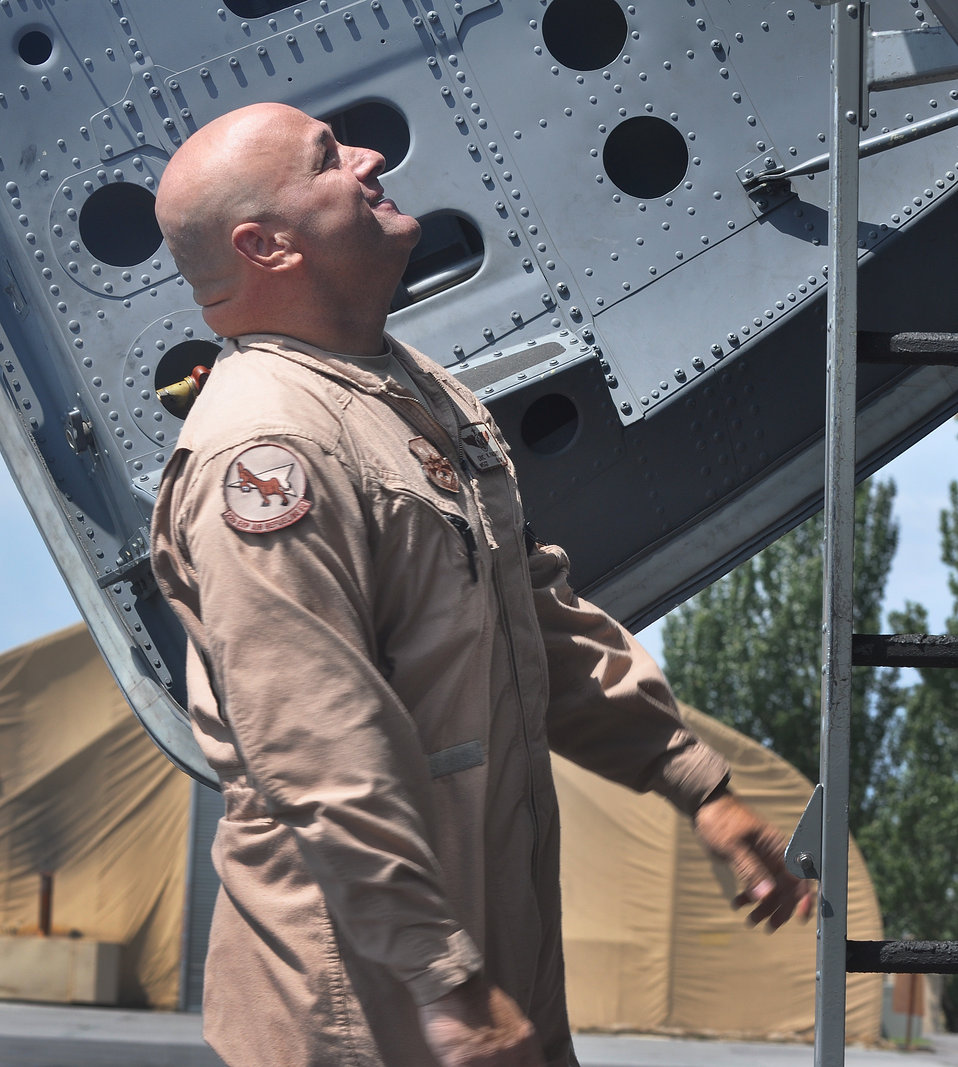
Hawaiian Airman

Master Sgt. Eric Faurott, loads bags before a refueling flight over Afghanistan, Aug. 2, 2012. The 22nd EARS provides aerial refueling support to Air Force, Navy, Marine Corps and allied nation aircraft in support of Operation Enduring Freedom. Faurott is a boom operator with the 22nd Expeditionary Air Refueling Squadron, has been in the military for 27 years, and is a native of Kapolei, Hawaii.